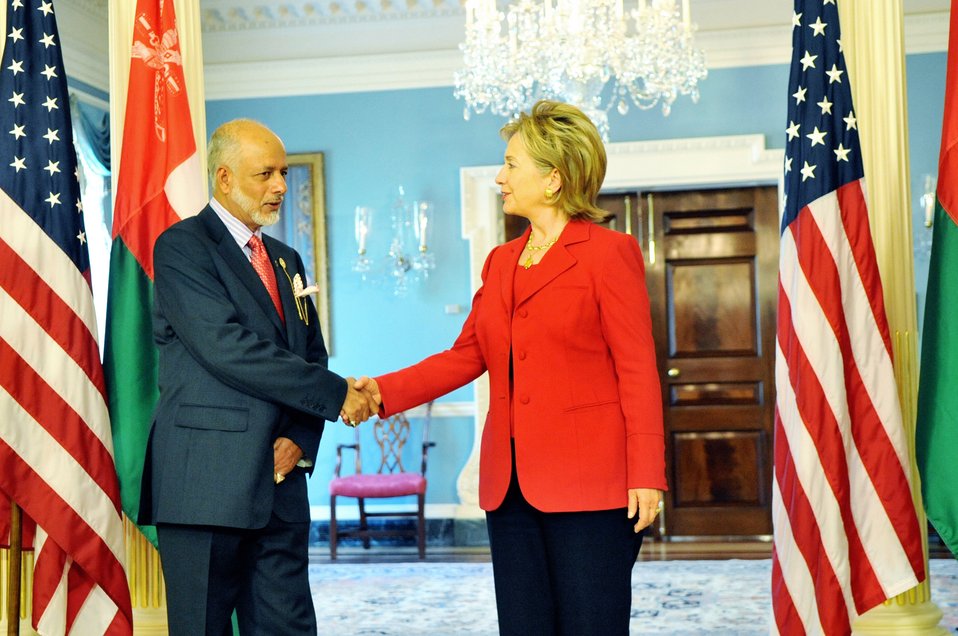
Secretary Clinton Meets Omani Foreign Minister

U.S. Secretary of State Hillary Rodham Clinton and Omani Minister Responsible for Foreign Affairs Yusuf bin Alawi bin Abdullah after their meeting in Washington, DC April 21, 2009.